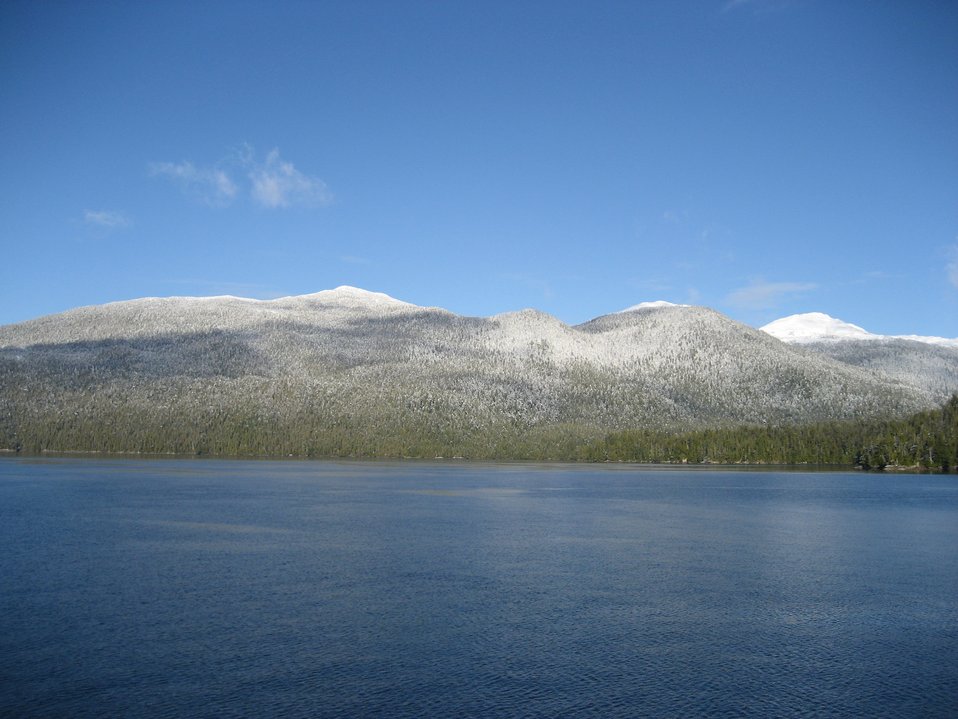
A sprinkling of snow at water level with mountains covered at higher elevations. A scene along the Inside Passage.